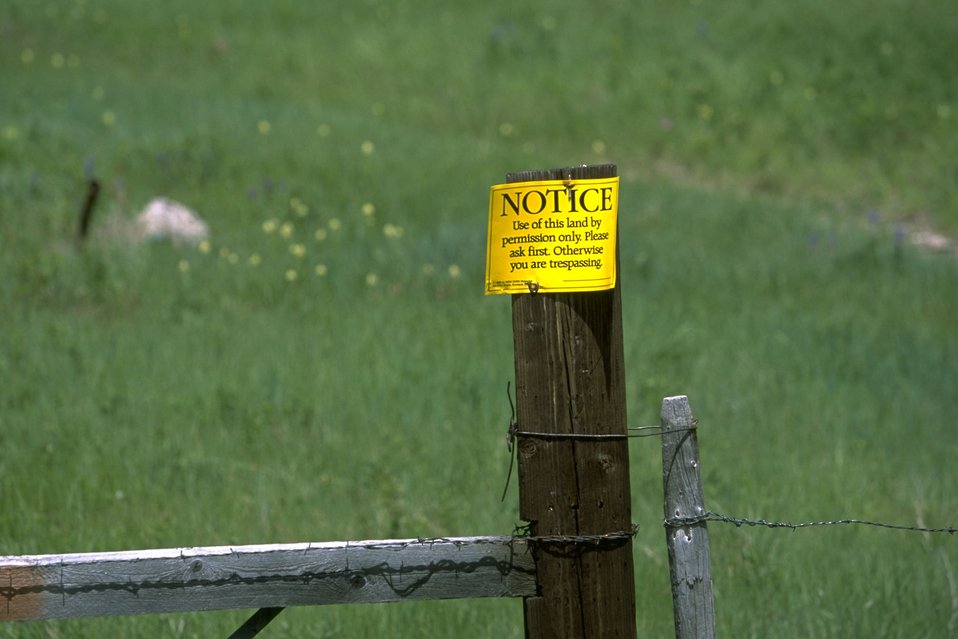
Posted private property sign in the Judith Mountains